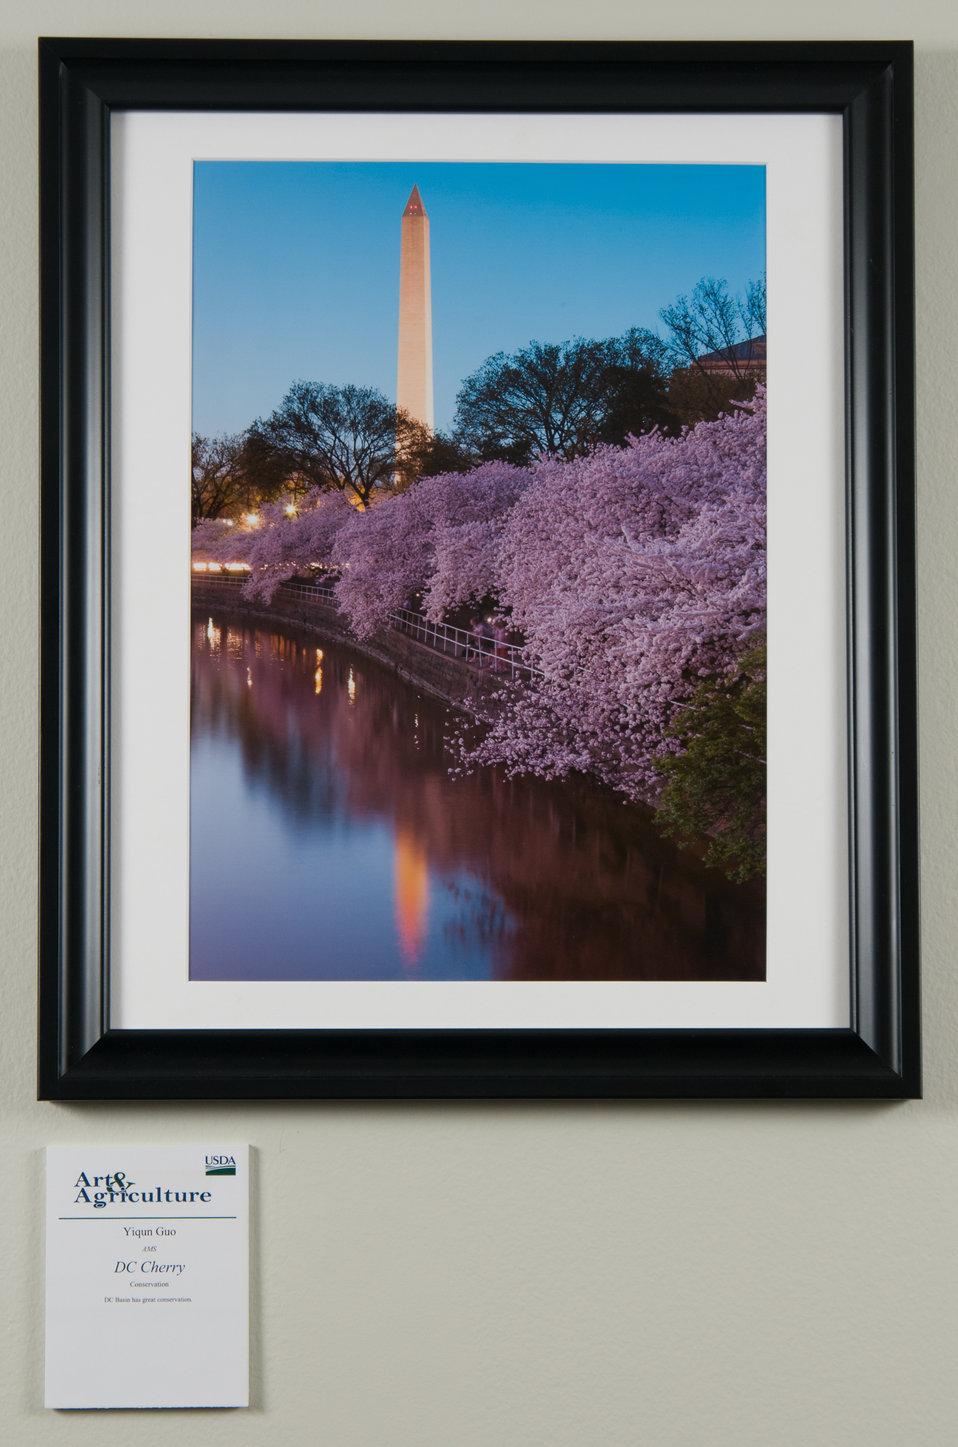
Online Viewer's Choice entries of the 2013 Art & Agriculture, Tuesday, July 9, 2013, in the South Building, Washington, D.C. Themes were expressed by employees from across the department and the contest was open to full-time and part-time USDA employees. Winning artwork will be displayed till the end of the year. U.S. Artistic expression is a creative outlet that is vital for an individual to grow and develop.